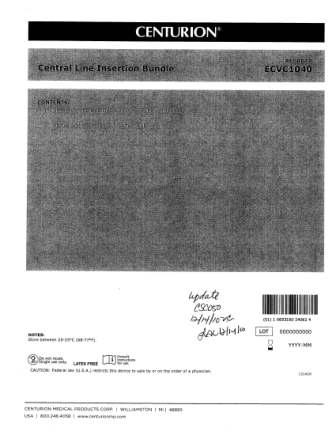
RECALLED - Convenience kits which contain bacteriostatic sodium chloride solution by American Regent

April 1, 2011 - Product Recall - Centurion Medical Products Initiates Voluntary Recall of Customized Convenience Kits (including select Central Venous Catheter, PICC Insertion, and VAD Trays) that contain American Regent’s Bacteriostatic Sodium Chloride Injection, USP, 0.9% 30 mL Multiple Dose Vials.